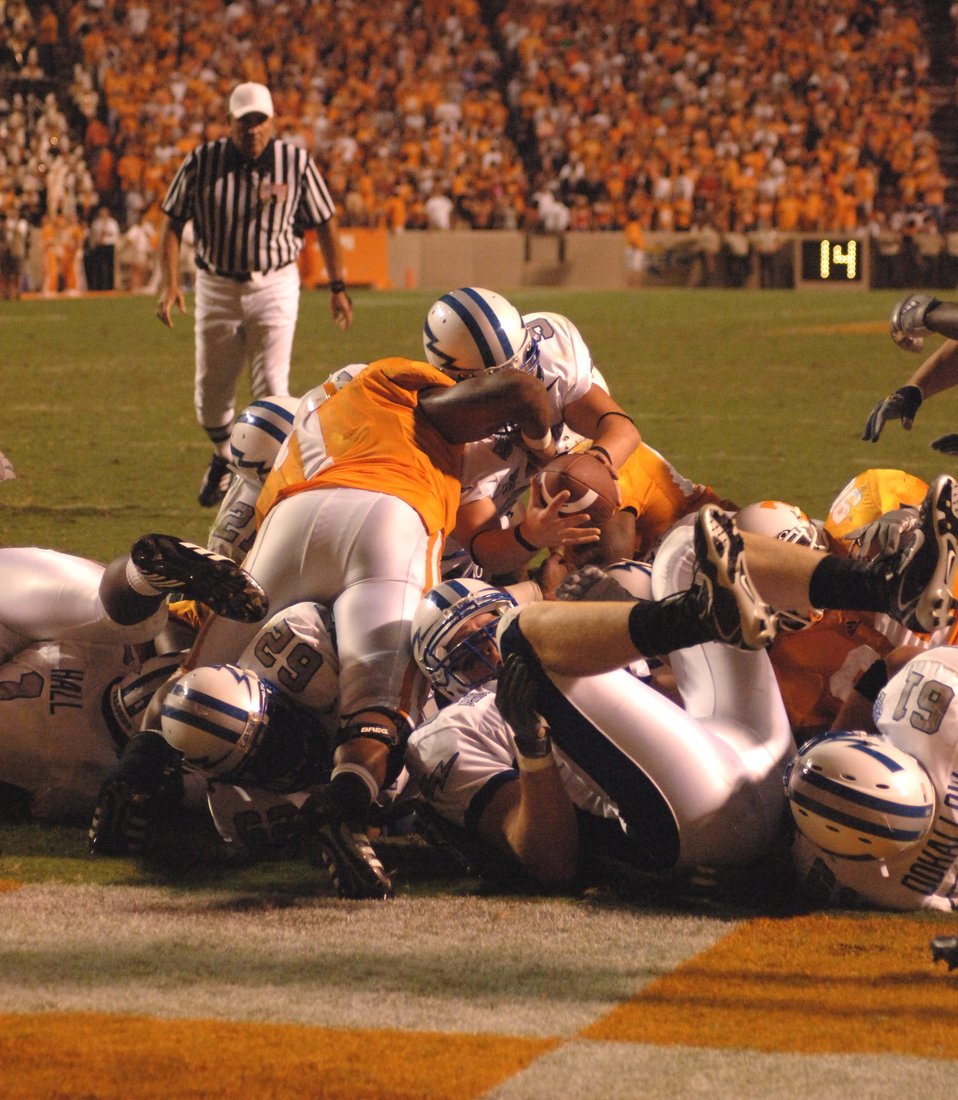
Falcons nearly upset #11 Tennessee in close season opener

Air Force Academy Falcons quarterback Shaun Carney stretches over the Tennessee line to score on a quarterback sneak Sept. 9. The third-quarter play pulled the Falcons within seven points of #11-ranked Tennessee. The Volunteers went on to edge the Falcons, 31-30.